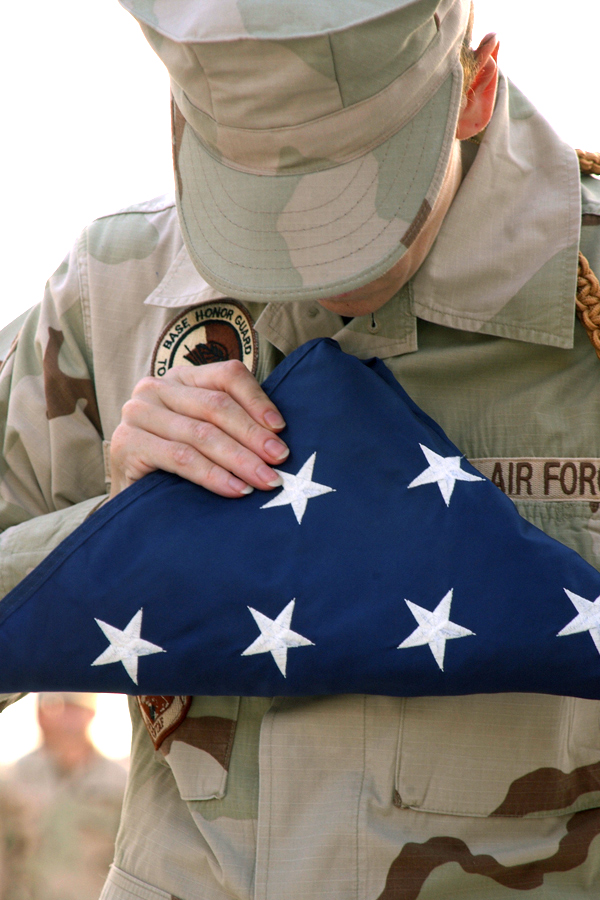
Remembering Sept. 11

SOUTHWEST ASIA -- Master Sgt. Christina Hamel receives the American flag during a Sept. 11 retreat ceremony for members of the 379th Air Expeditionary Wing at a forward-deployed location. The base honor guard completed the ceremony, which preceded a Sept. 11 memorial service at the base's theater. Sergeant Hamel is deployed from the Kansas Air National Guard's 184th Air Refueling Wing at McConnell Air Force Base.